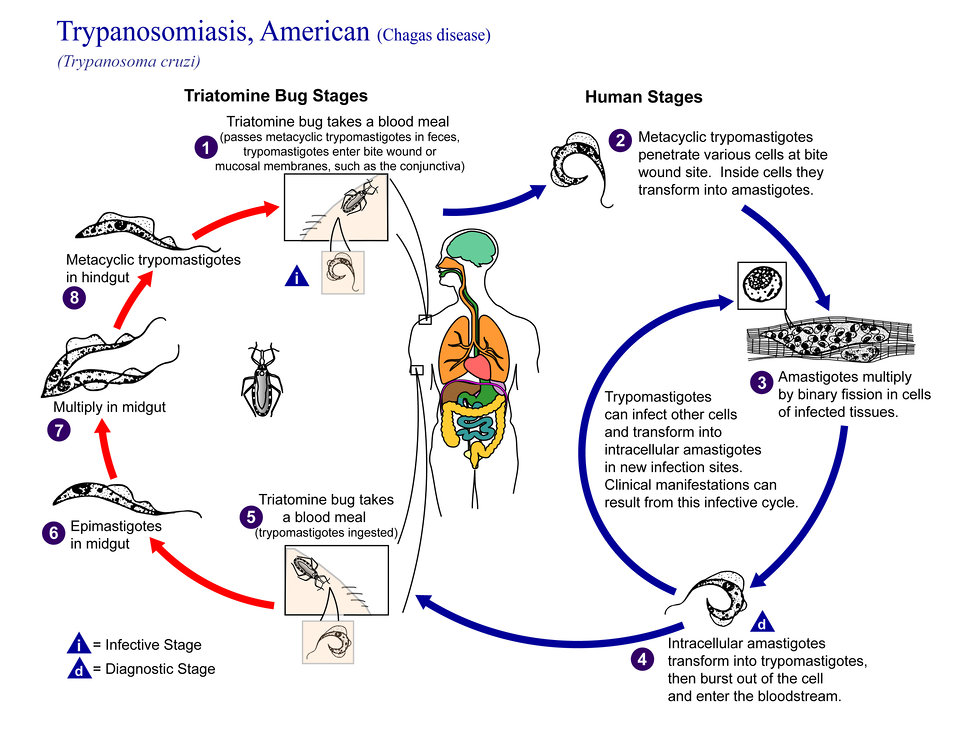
This illustration depicts the life cycle of Trypanosoma cruzi, the causal agent of American Trypanosomiasis.